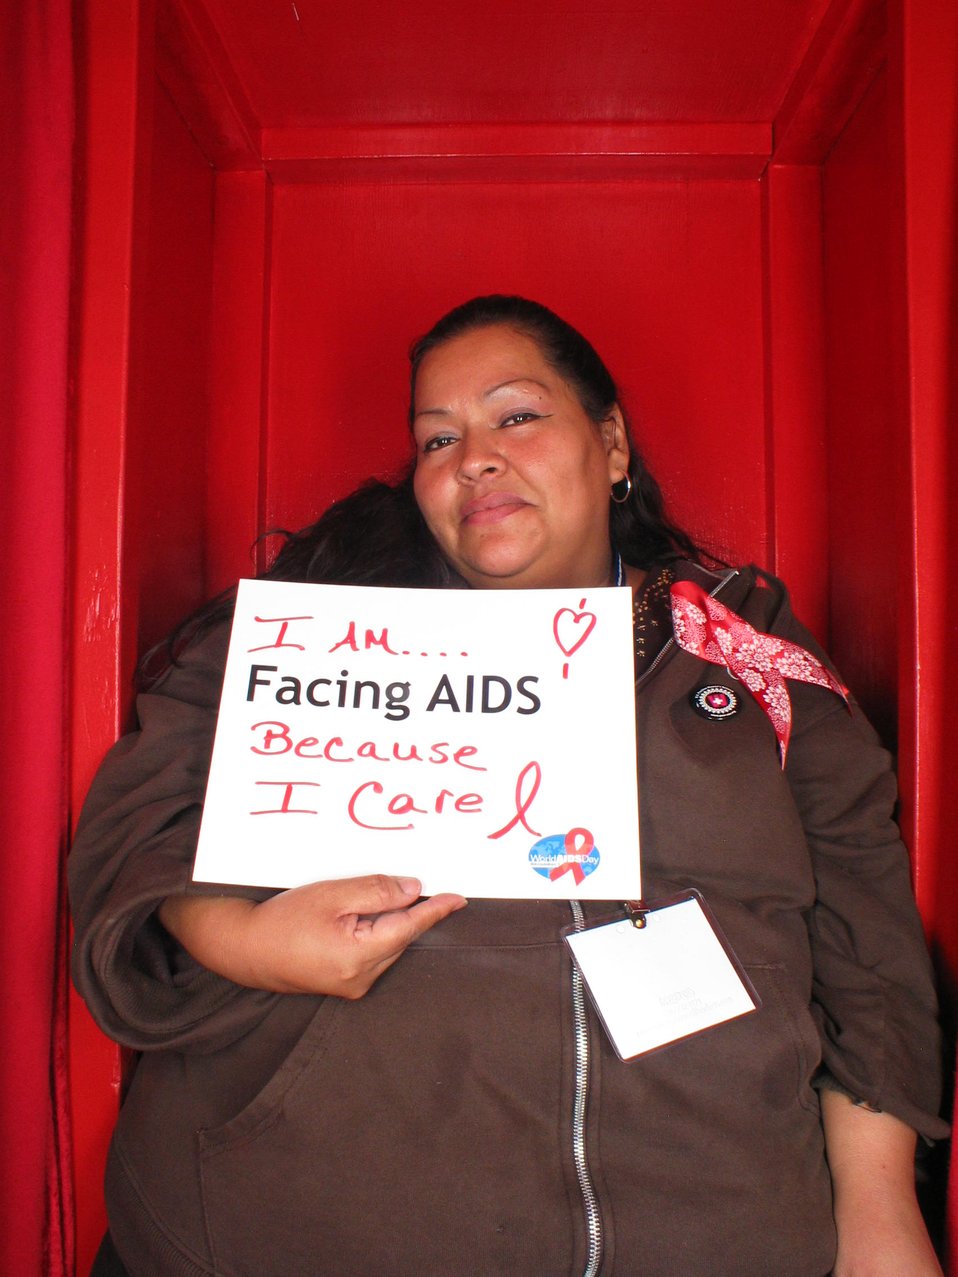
I am Facing AIDS because I care.